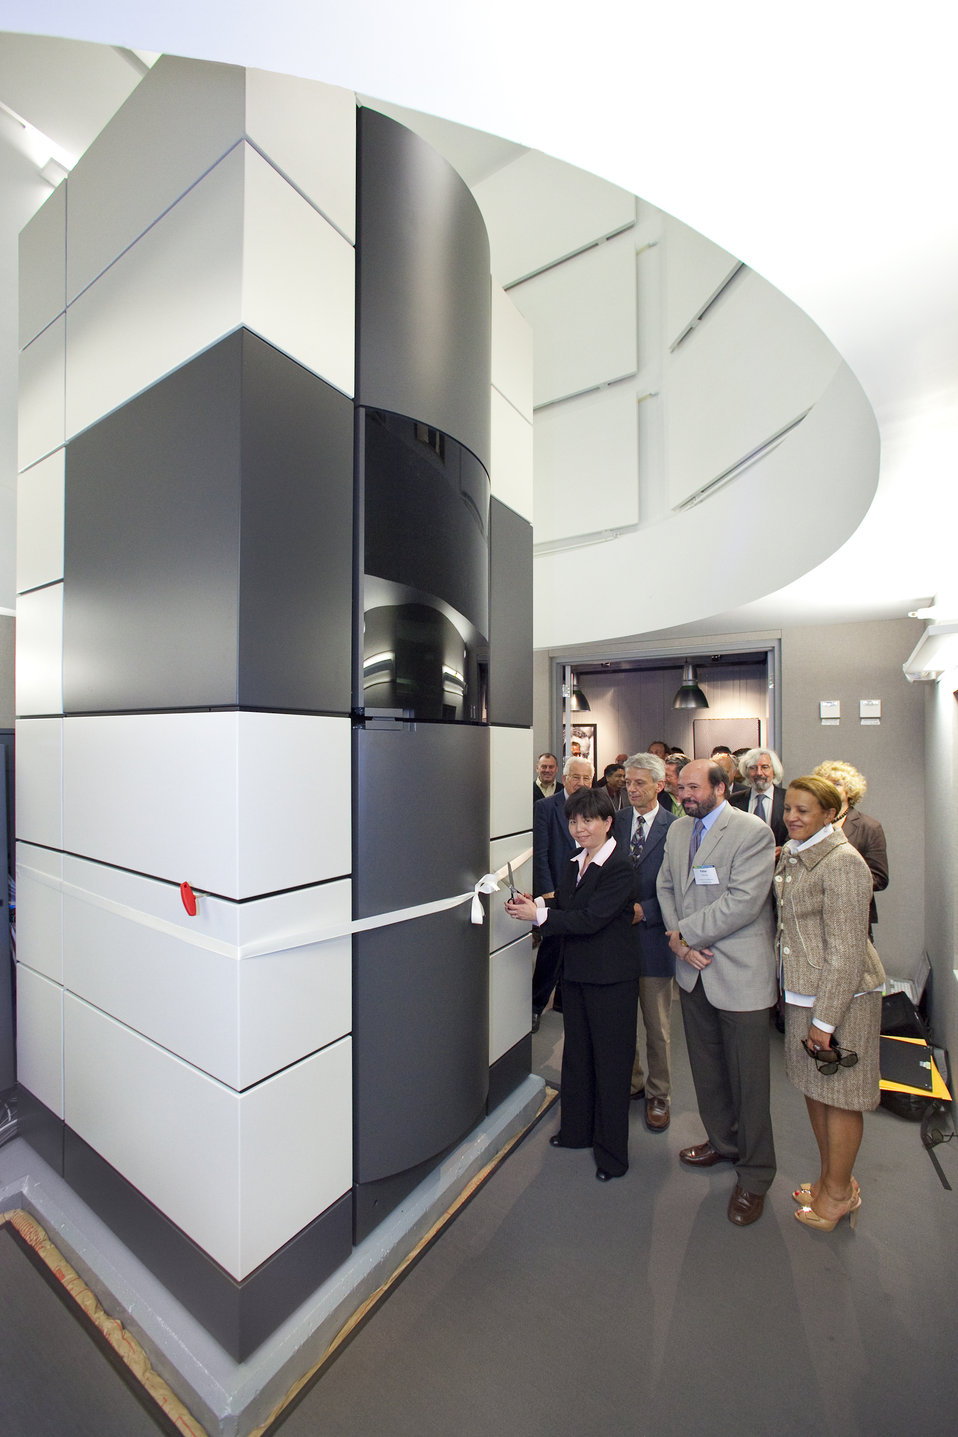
Harriet Kung, associate director of science for DOE's Office of Basic Energy Sciences, was one of the kick-off speakers at last week's joint meeting of the Advanced Light Source and Molecular Foundry user and took advantage of her visit to the lab to inaugurate the TEAM 1.0 microscope at the National Center for Electron Microscopy (NCEM). Cutting the ribbon that launched TEAM, Kung was assisted by (from left in photo) Uli Dahmen, heat of NCEM and the TEAM collaboration, TEAM Project Manager Peter Denes, and Berkeley Site Office Manager Aundra Richards.